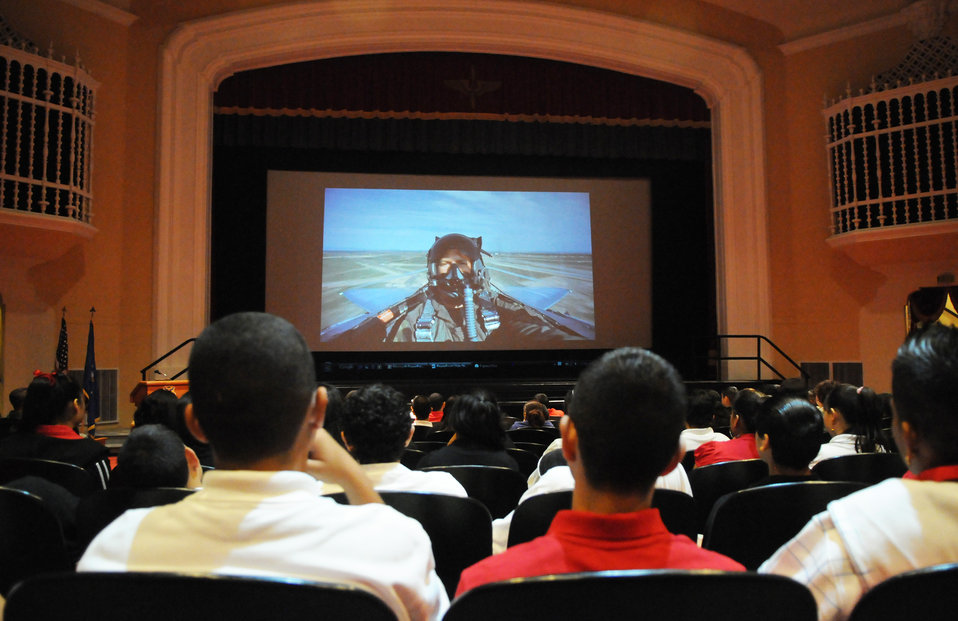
Randolph Airmen expose at-risk students to today's Air Force

Fox Technical High School students watch a documentary about Air Force fighter pilots and support crew during a visit Sept. 11, 2009, to Randolph Air Force Base, Texas. The San Antonio students visited the base as part of the Giving Americans Motivational Education for the Real World program, which showed what an Air Force career may look like.